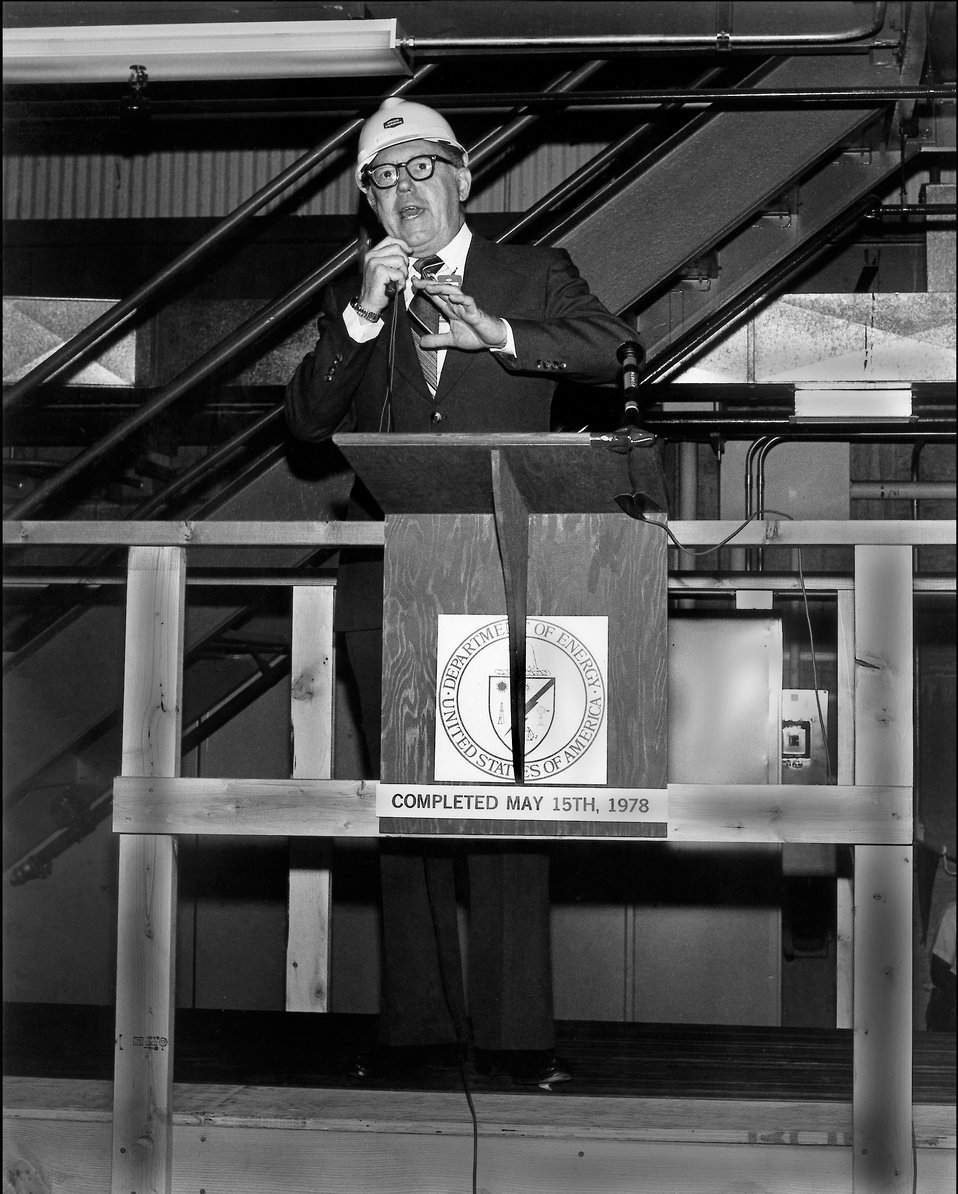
Bill Wilcox Speaking at K-25

78-306c DOE photo Frank Hoffman 5-22-1978 K-25 Oak Ridge Tennessee